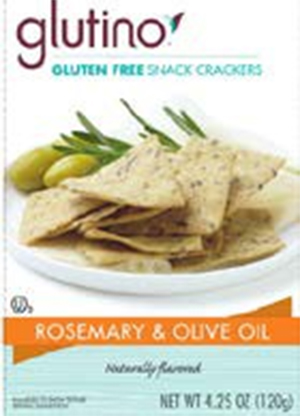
Gluten Free Snack RECALLED – Rosemary and Olive Oil Snack Crackers

June 2, 2014 – Product Recall – Glutino Voluntarily Recalls Glutino Rosemary and Olive Oil Snack Crackers (4.25 oz. and 20 oz.) Because of Possible Health Risk.